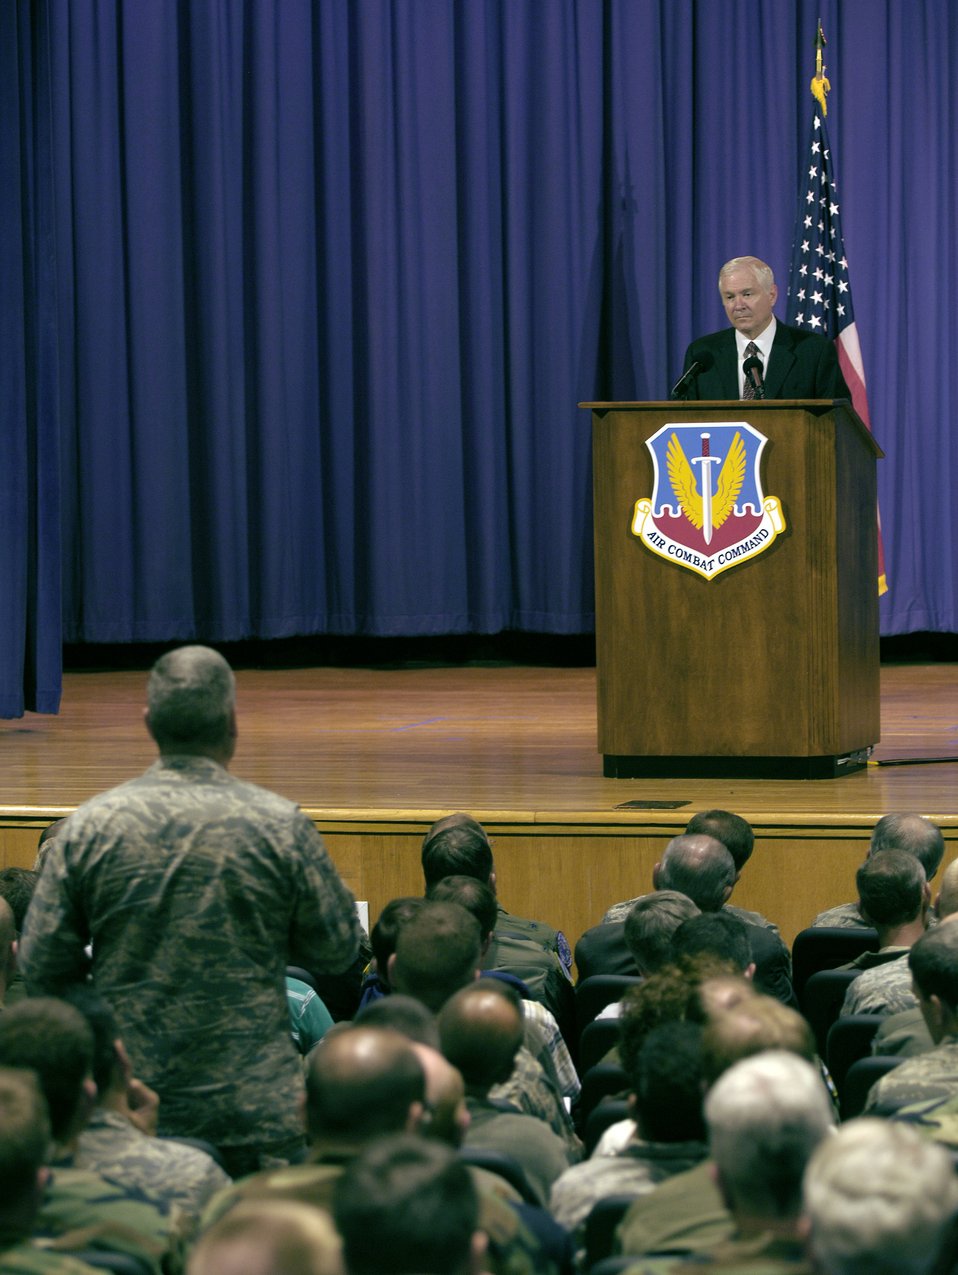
Secretary Gates cites Air Force's value in war on terrorism

Defense Secretary Robert M. Gates listens to a question from an Air Combat Command Airmen June 9 at Langley Air Force Base, Va. Secretary Gates reassured Airmen that they are the premier Air Force in the world and discussed the recent resignations of top Air Force officials.